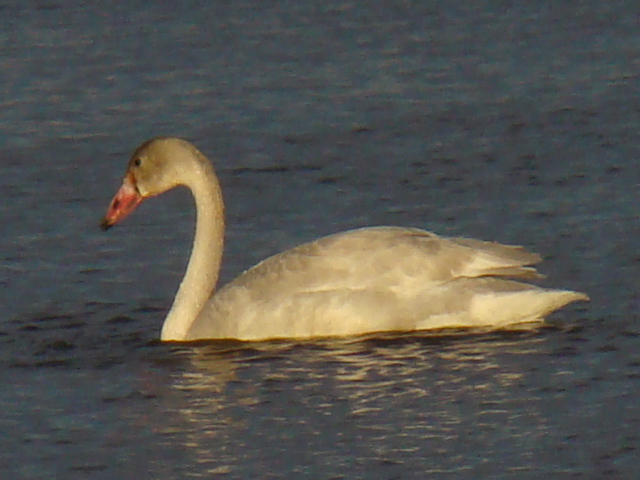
Juvenile Trumpeter Swan

The lands of the refuge were established to protect and provide habitat for migratory birds that cross State lines and international borders and are by law a Federal trust responsibility.
The refuge is of great value to waterfowl and shorebirds, as well as other migrating water-dependent bird species, because of the diversity of wetland and upland habitats that provide for the diverse life cycle needs of these species.